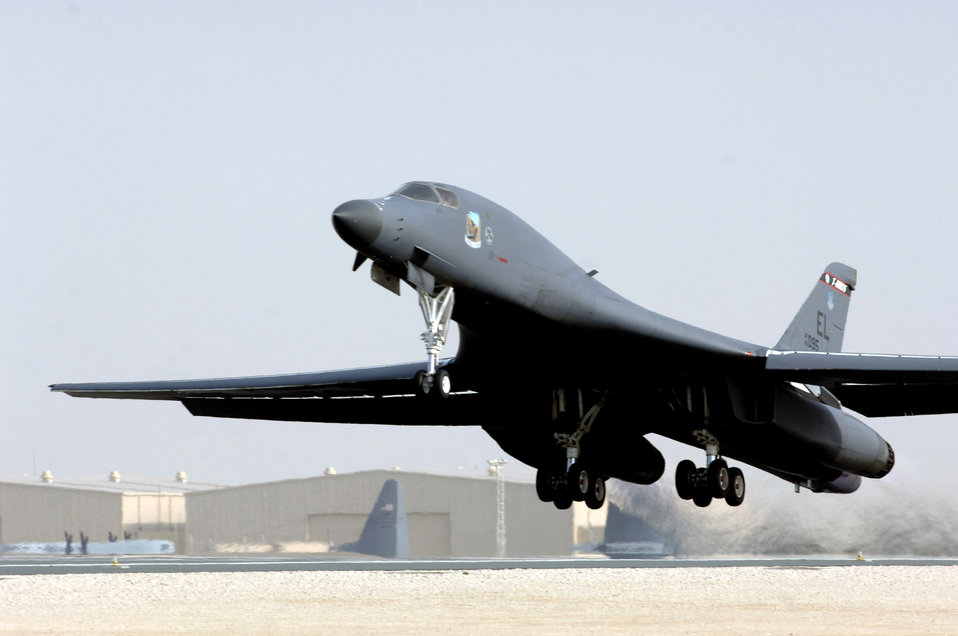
Airpower Summary for Oct. 21, 2007

A B-1B Lancer takes off from an air base in Southwest Asia. B-1s from the 34th Expeditionary Bomb Squadron increased operations in support of ground forces in Afghanistan using precision bombing and shows of force and presence.